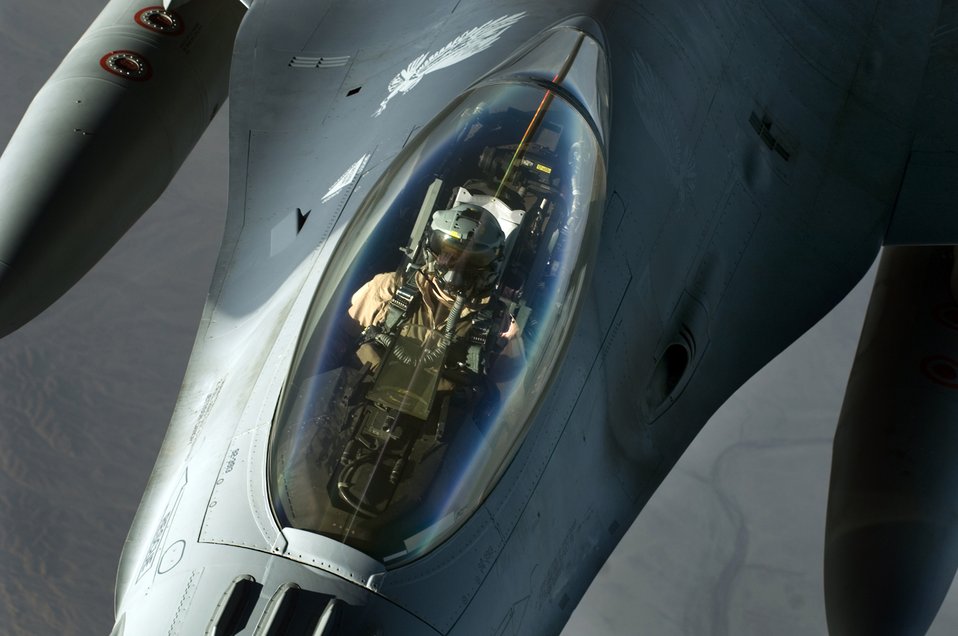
KC-135s keep them flying

A F-16 Fighting Falcon detaches from a KC-135 Stratotanker after refueling over Iraq in support of Operation Iraqi Freedom. On Jan. 29, U.S., French and Royal Air Force tankers flew 25 sorties and off-loaded almost 1.6 million pounds of fuel in support of OIF and Operation Enduring Freedom.